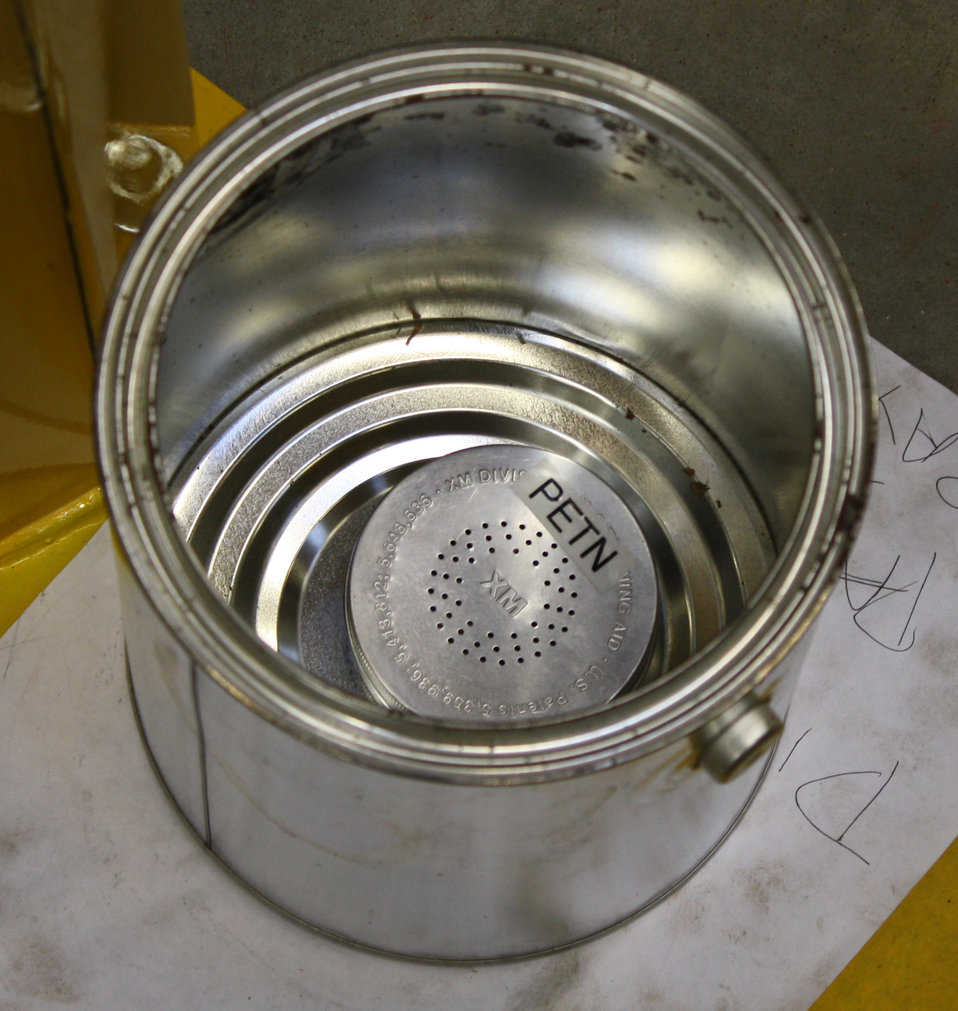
Test container of the NIST odor-releasing material hiding in a pail waiting to be discovered.